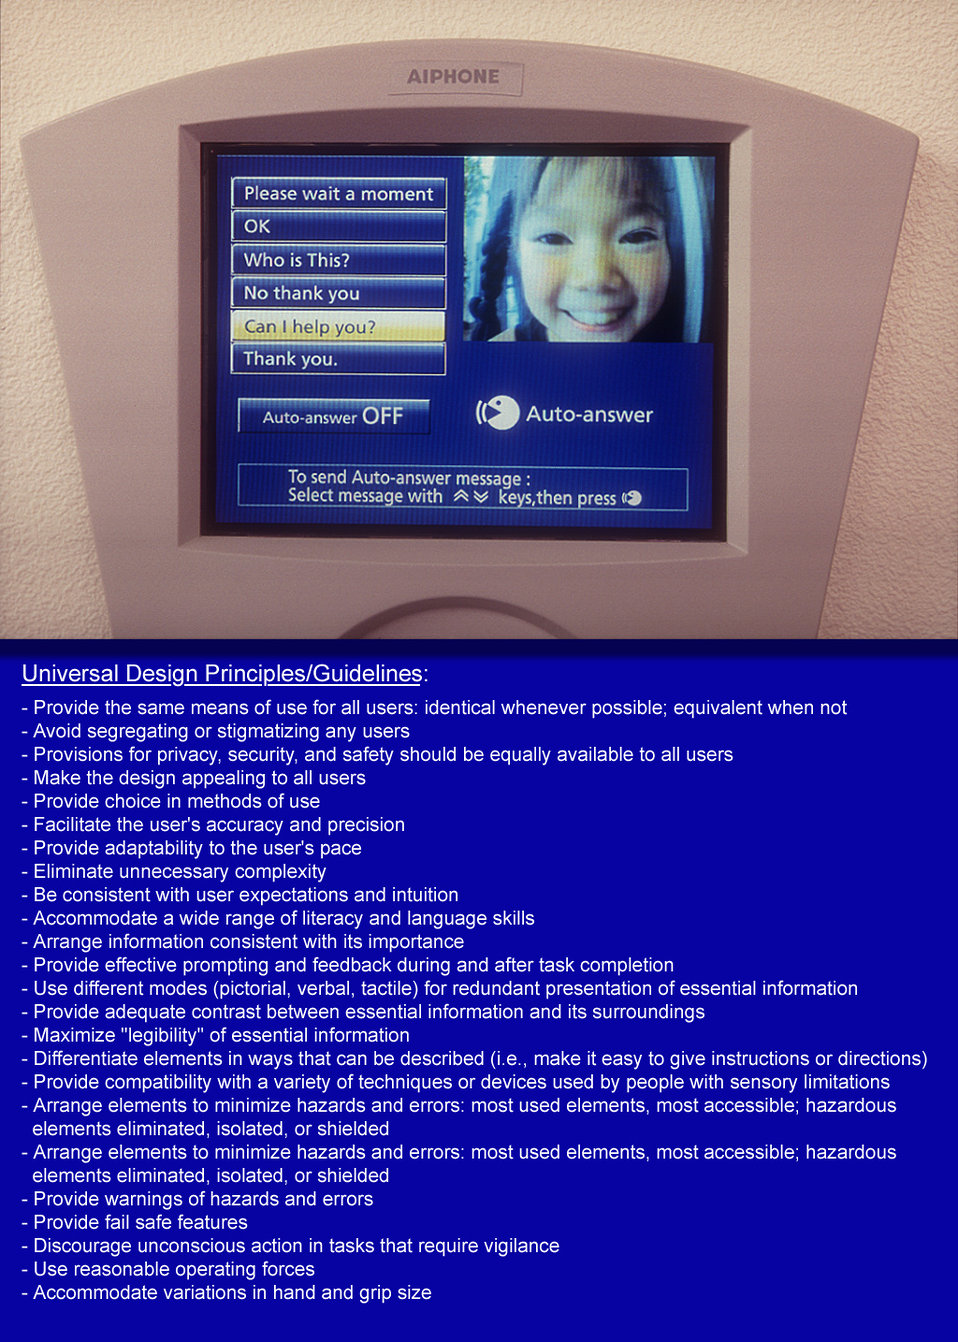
PHIL# 9108 - 9112 depicted the Aiphone� Universal Video Entry System, a prototypical video phone designed to allow residents to identify visitors before granting entrance, and to allow them to monitor communication without having to go to the master station should moving be slow, difficult, or undesirable at that time. The system's features include visual, tactile, and audible feedback offering an unusually high degree of redundancy in conveying information, while its Video Entry System offers security and convenience to all users, especially those who live alone.By moving the cursor key, then pushing the Auto-Answer button, a resident may select a message from the monitor's prerecorded message group to respond to visitors. This conveys the synthesized voice message to the visitor, a function extremely useful for someone who has difficulty speaking. If not at home, the system can video-record a visitor's image and voice, and later deliver a pre-selected audio message.